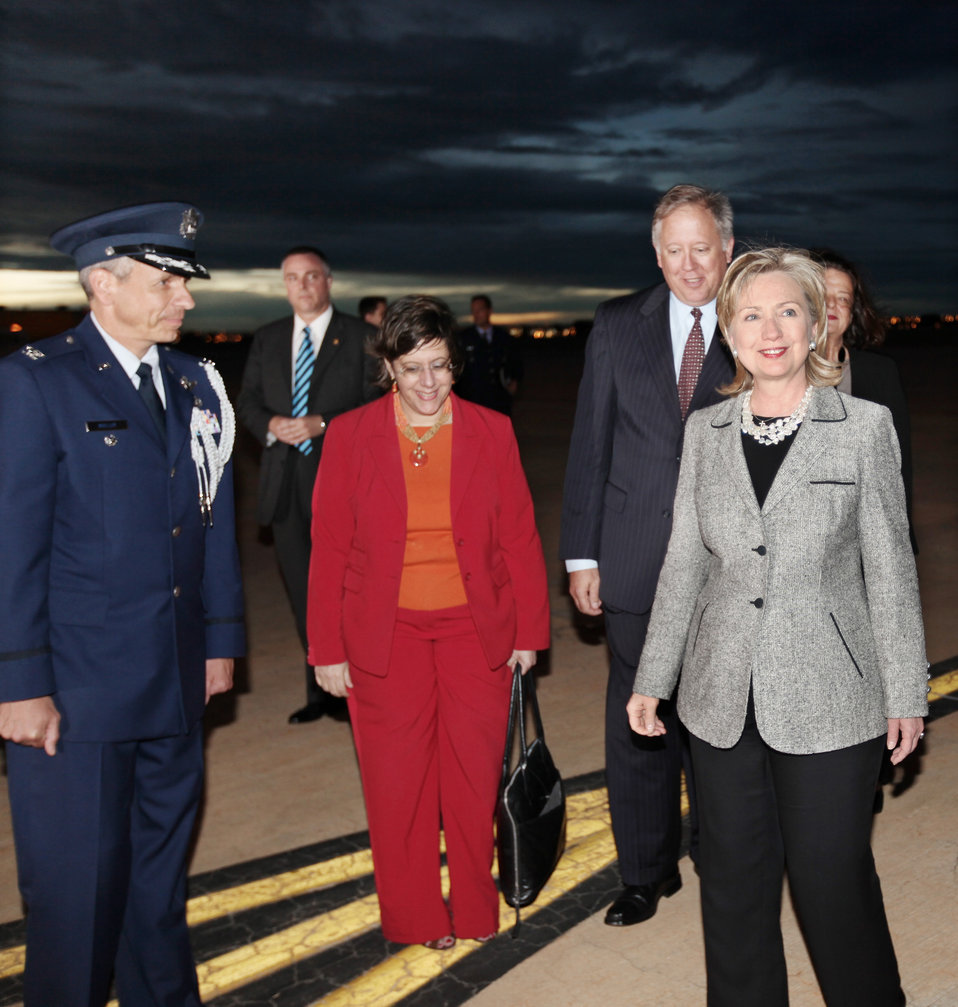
Secretary Clinton Speaks with Deputy Chief Lisa Kubiske

Air Base Colonel Maxneif Cabral Mendes de Castro, the Deputy Chief of U.S. Embassy Lisa Kubiske, and the U.S. Ambassador to Brazil Thomas Shannon greet U.S. Secretary of State Hillary Rodham Clinton upon arriving in Brasilia, Brazil March 2, 2010.